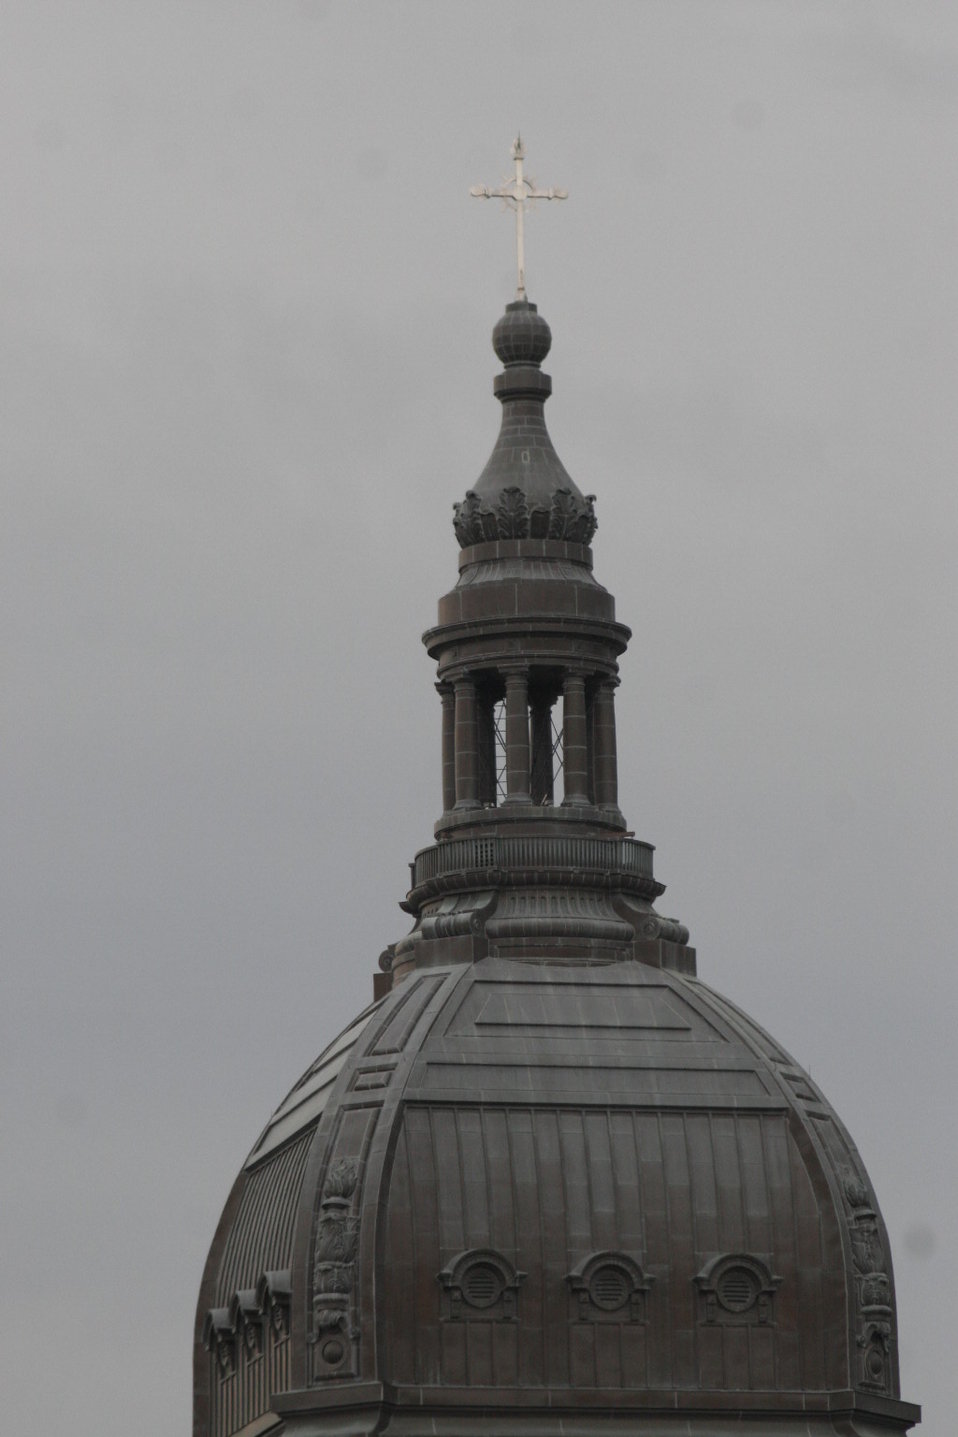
Basilica of St Mary in en:Minneapolis, en:Minnesota. June 24, 2006